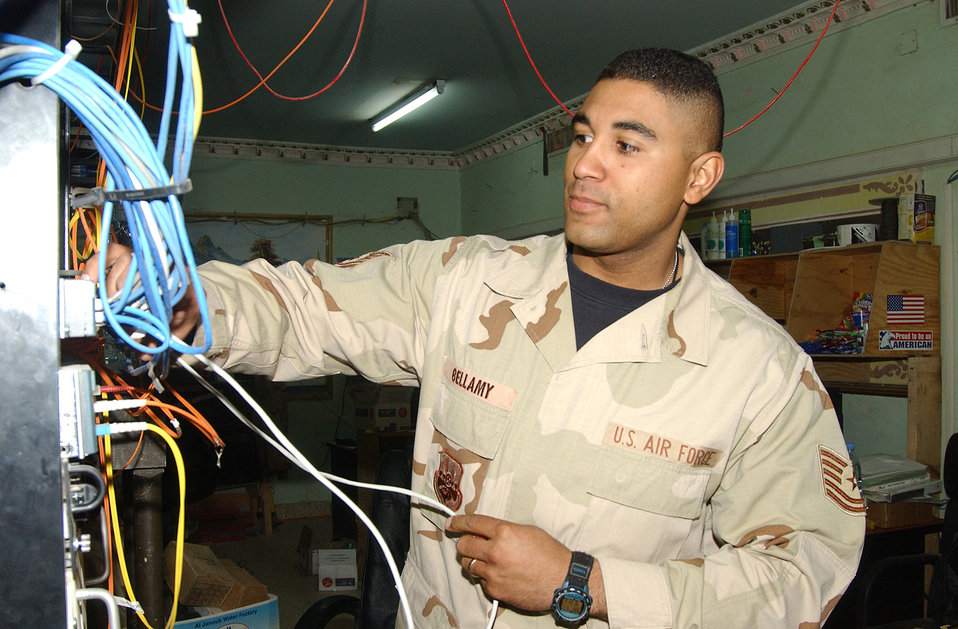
Comm squadron makes mission possible

BALAD AIR BASE, Iraq - Tech. Sgt. Will Bellamy patches a computer into a network switch here. Airmen with the 332nd Expeditionary Communications Squadron work together to provide communication means throughout the base. Sergeant Bellamy is the noncommissioned officer in charge of network managements with the squadron, and is deployed from Barksdale Air Force Base, La.